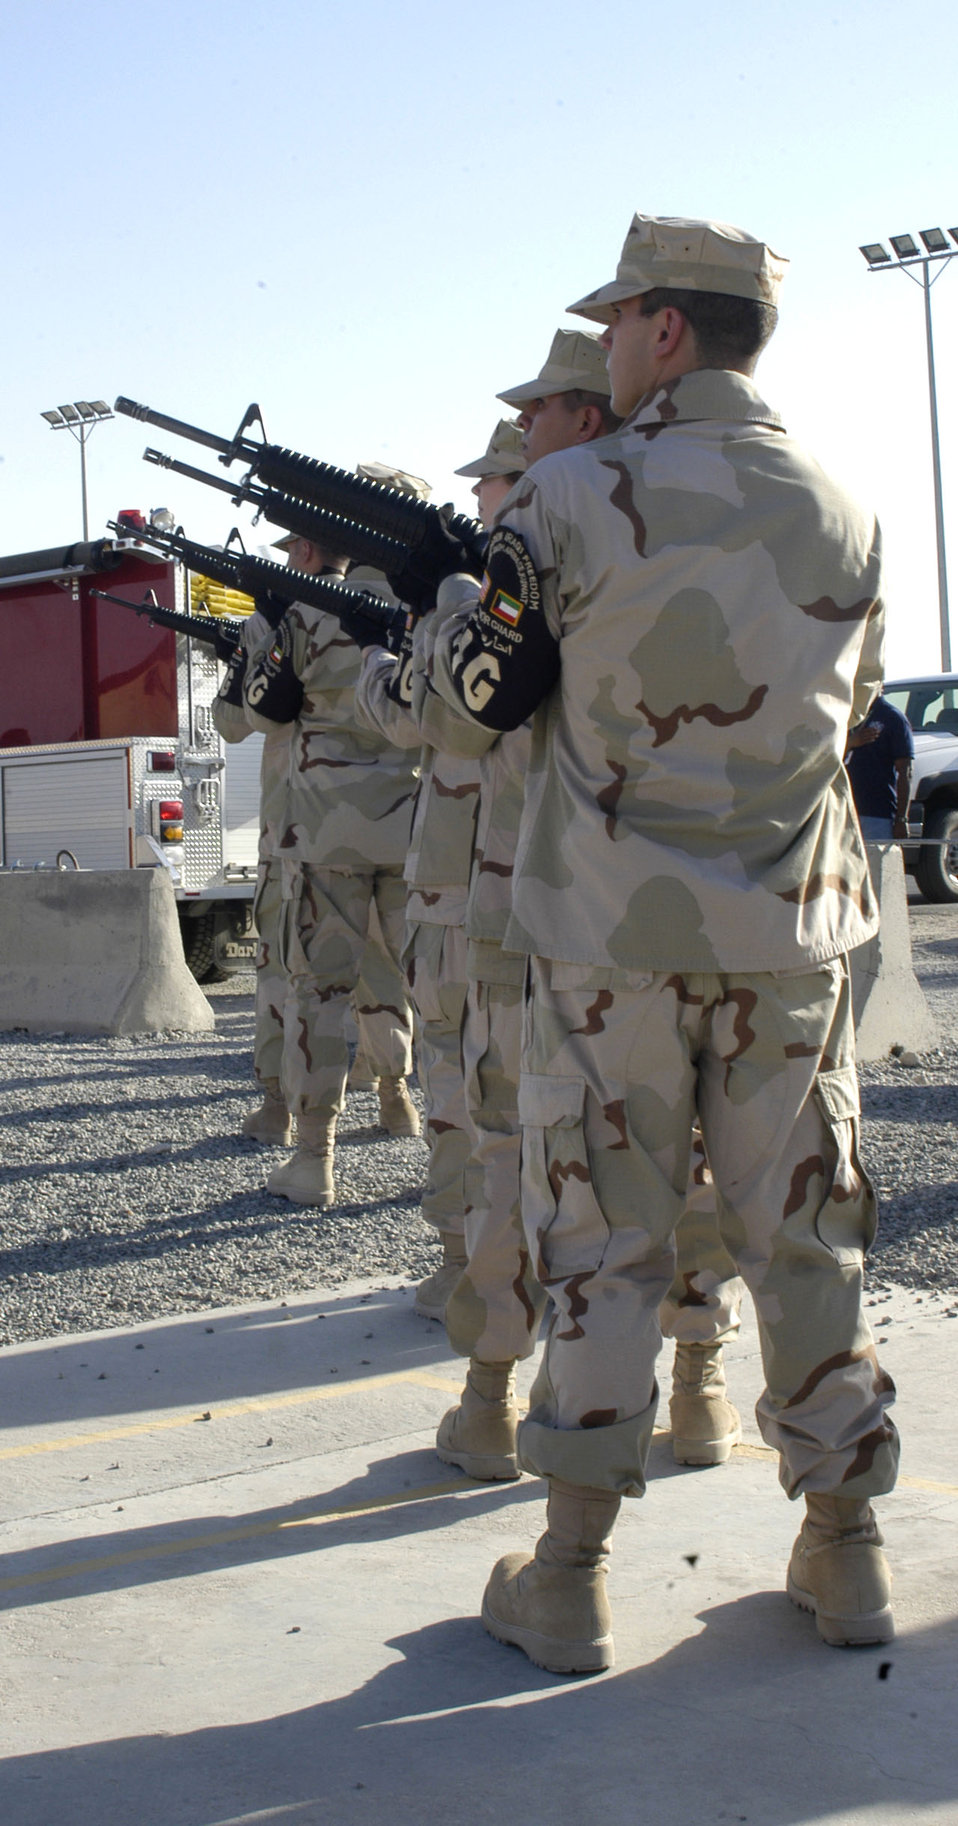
Five years later Airmen remember 9/11, continue the fight

Honor guard members from the 386th Air Expeditionary Wing fire three volleys during a 9/11 memorial service held here Sept. 11. Coalition members from the Australia Defense Force, Japan Air Self Defense Force and Republic of Korea Air Forces also attended the event.